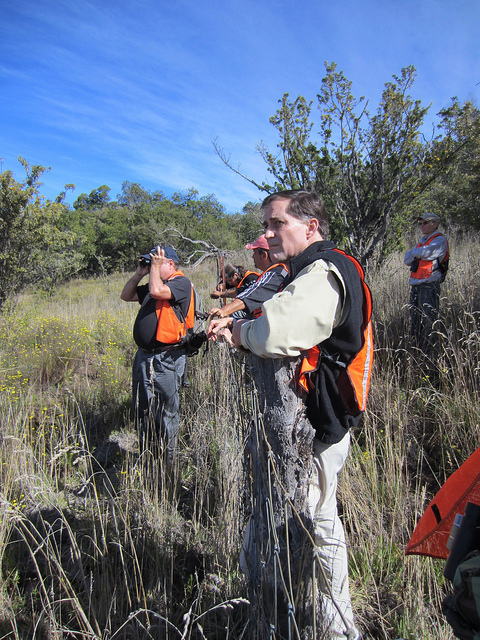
Dan Ashe on Mauna Kea

Looking fr the Endangered Palila on Mauna Kea.